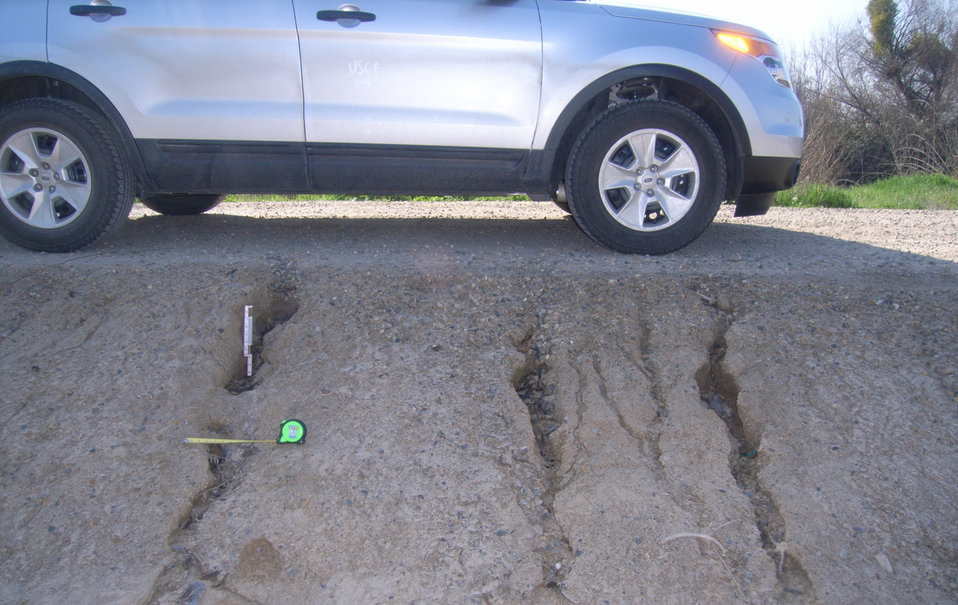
Erosion on Kings River levee

Levee erosion in the Fresno County, Calif., area, shown during a levee inspection in 2012. The U.S. Army Corps of Engineers inspects levees in its Rehabilitation and Inspection Program to ensure levees don’t pose an unacceptable risk to lives and to provide levee managers and residents with detailed information on the condition of levees to help them make informed decisions about safety.